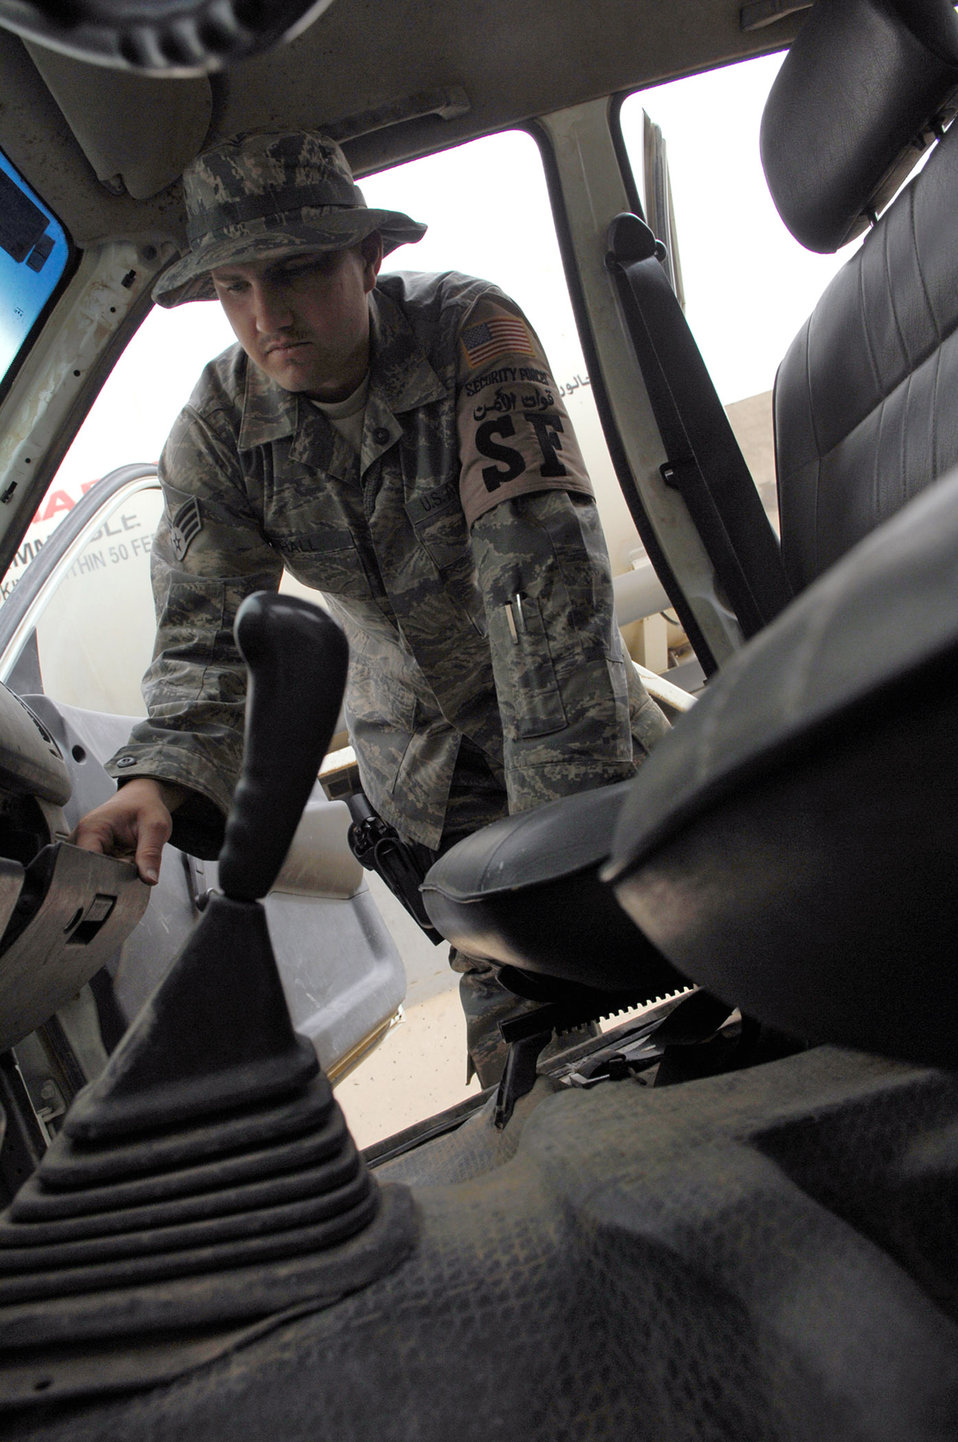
Inspecting and protecting

Senior Airman Branden Hall looks in the glove compartment of a vehicle May 17 at Balad Air Base, Iraq. Preventing unauthorized items from entering the base via vehicles or personnel ensures the safety of those assigned to the base. Airman Hall is a 332nd Expeditionary Security Forces Squadron force protection inspector deployed from Luke Air Force Base, Ariz.